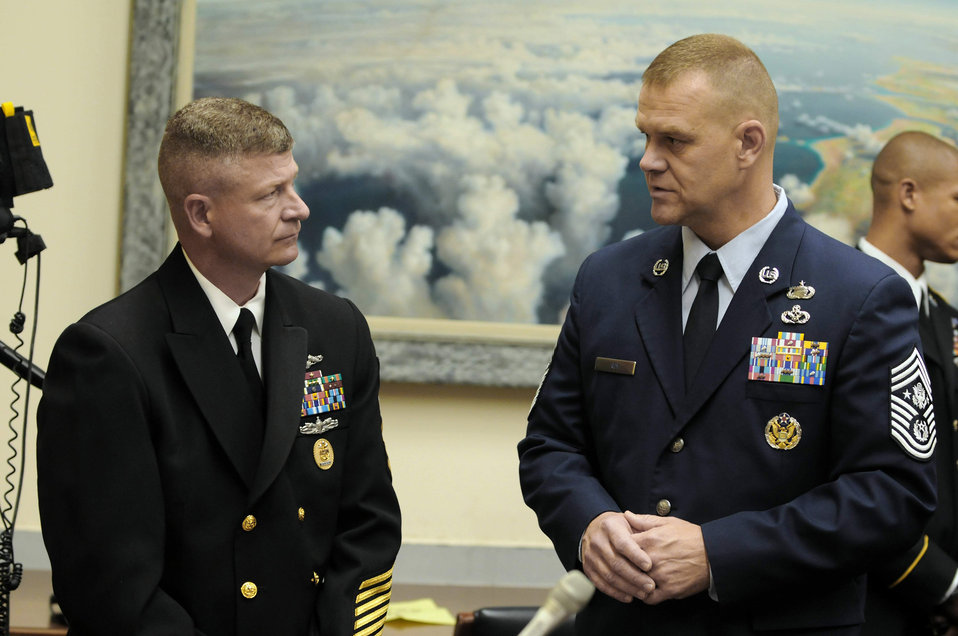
CMSAF addresses House

Master Chief Petty Officer of the Navy Rick West speaks with Chief Master Sergeant of the Air Force James A. Roy before testifying before the House Armed Services Committee, Subcommittee on Military Personnel at the Rayburn House Office Building July 22.